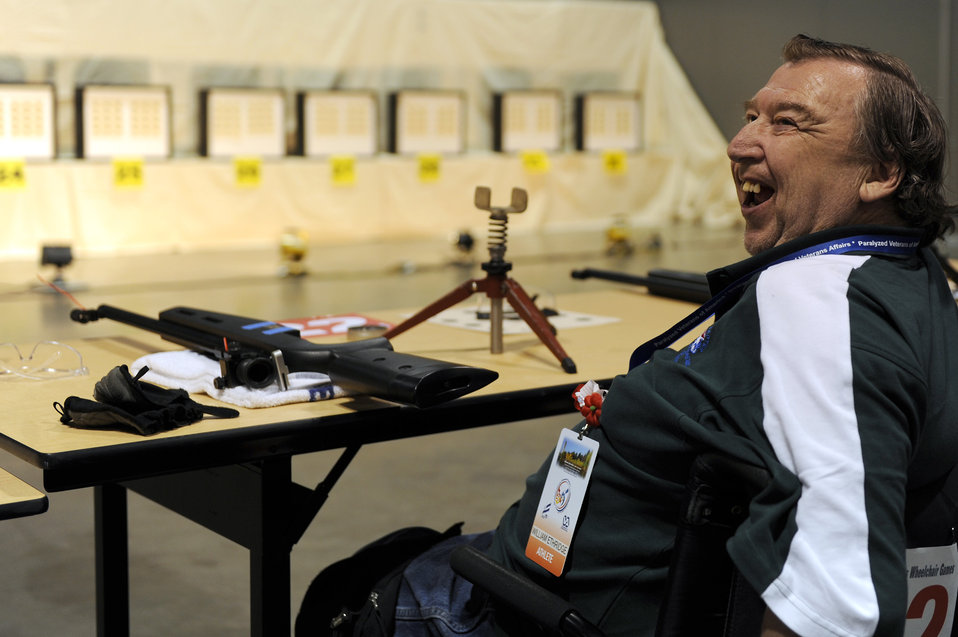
Wheelchair athletes participate in wheelchair games

William Ethridge smiles with excitement as he competes in the air gun competition Jul. 14 during the 29th National Veterans Wheelchair Games in Spokane, Wash. Ethridge is an Air Force veteran and resides in Spokane, Wash. The 29th National Veterans Wheelchair Games runs through Jul. 19.